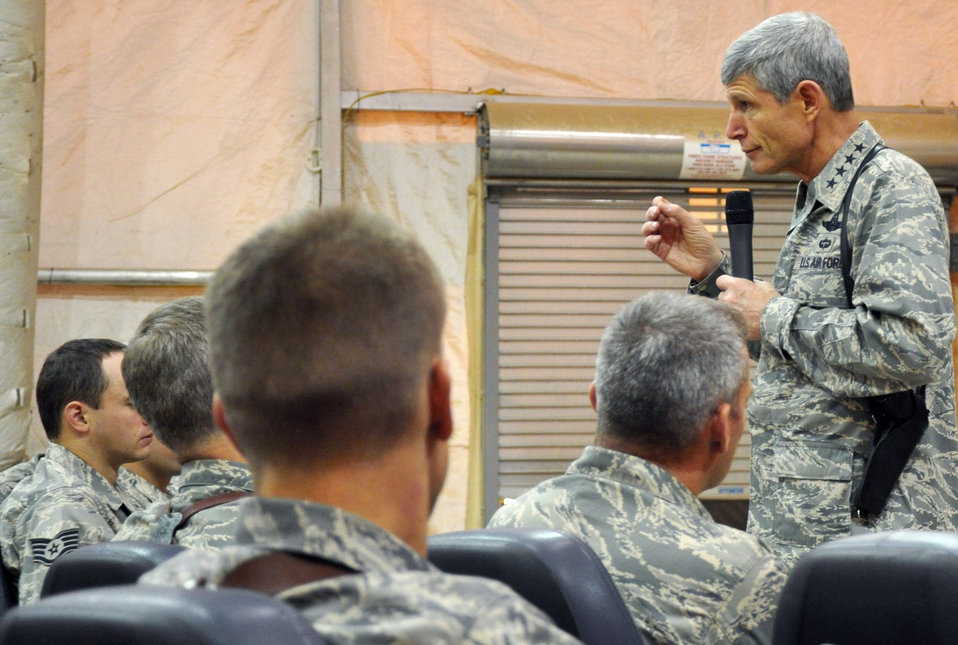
CSAF visits Sather

Air Force Chief of Staff Gen. Norton Schwartz visited the 447th Air Expeditionary Group June 24, 2010, at Sather Air Base, Baghdad. The general met with Airmen to discuss the importance of who they are and what they do to support the mission. Airmen from Sather AB and from the surrounding Victory Base Complex were given the opportunity to ask questions and share stories about their accomplishments here.